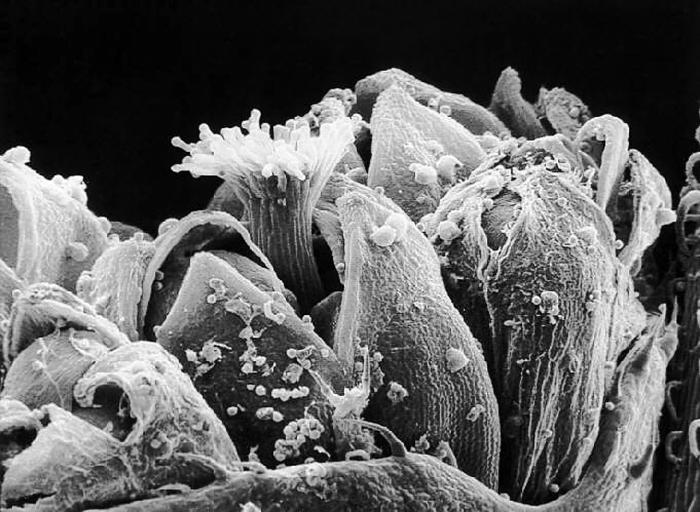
This is a scanning electron micrograph of an Ambrosia trifida plant, or more commonly known as ragweed. See PHIL 243 for a colorized version of this image.